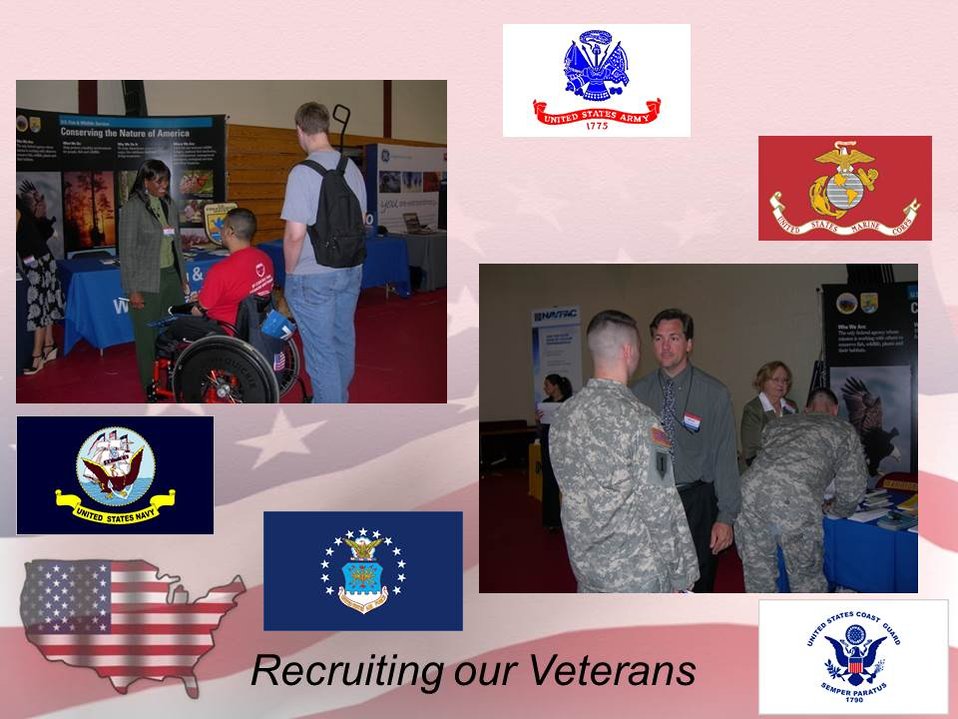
Recruiting our Veterans